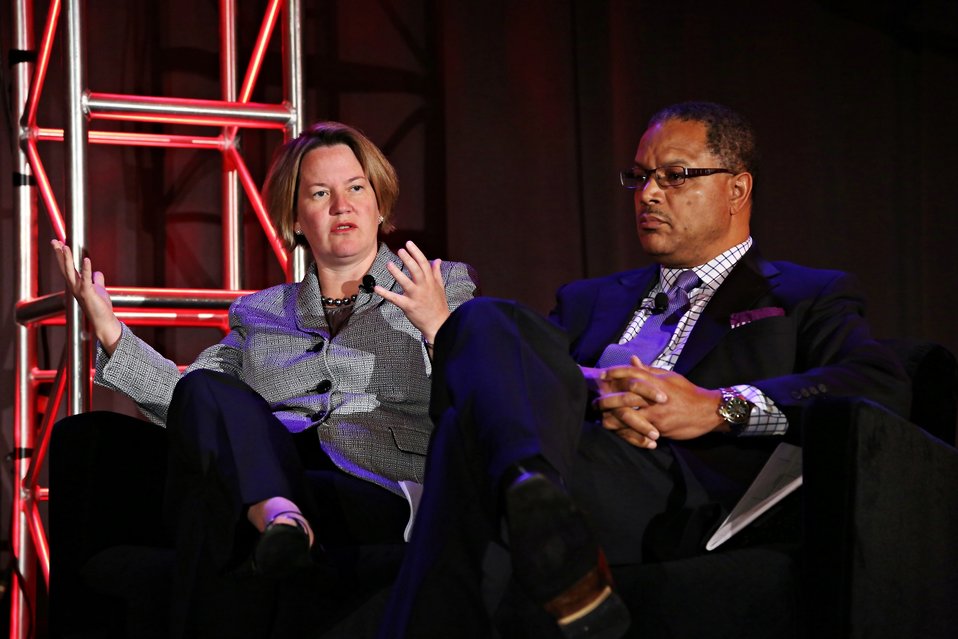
Day 2 Keynote Session 13

Day 2 headlining panel - Kris Mays, Professor at Arizona State University, and Timothy Simon, Consultant and Former California Utility Commissioner.